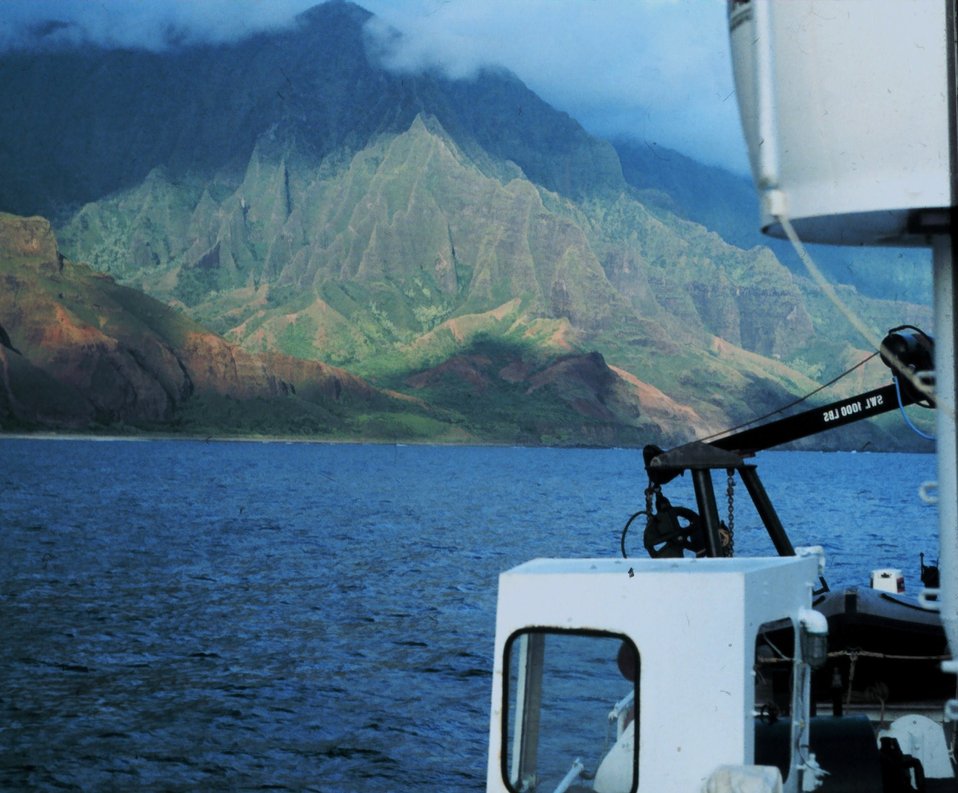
Sailing along the coast of Kauai.